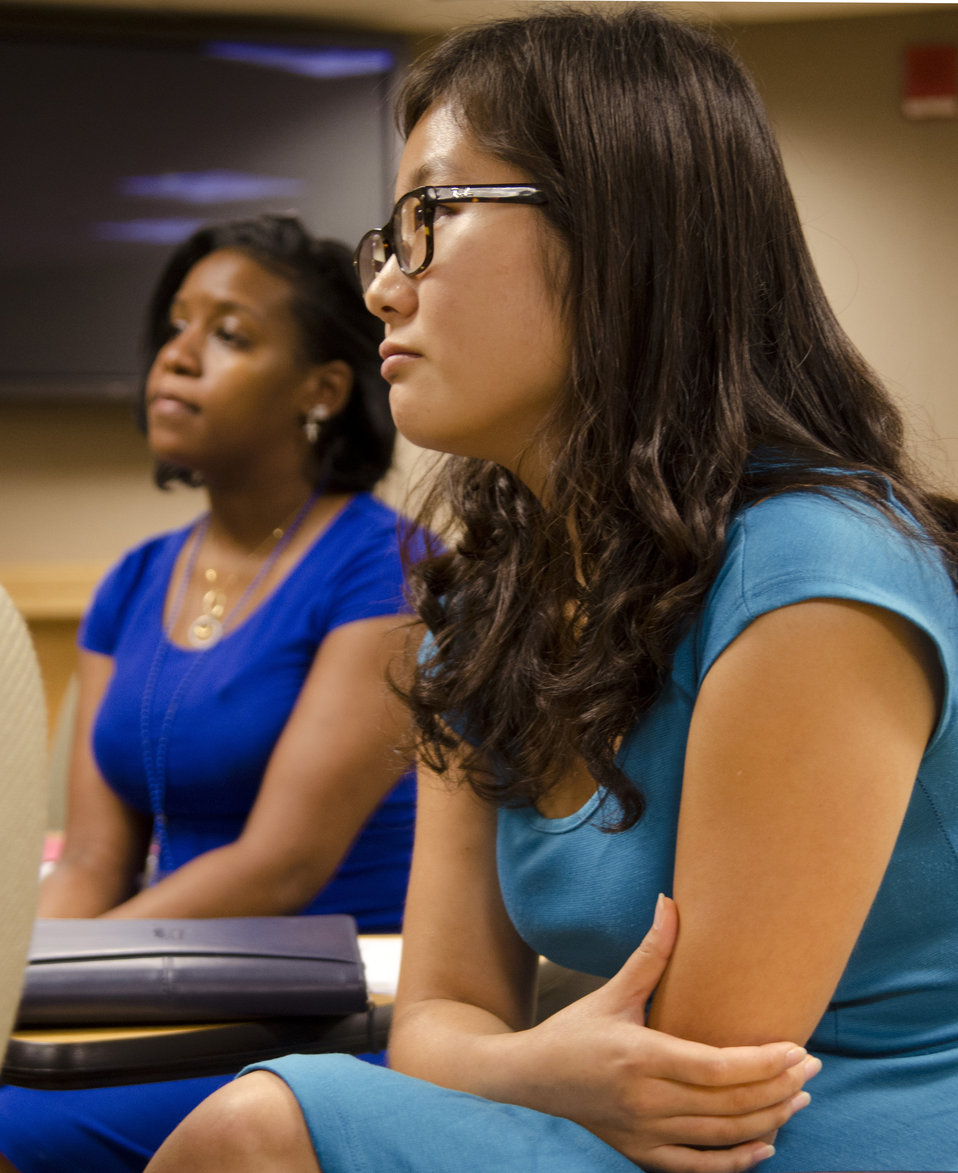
U.S. Department of Agriculture (USDA) Foreign Agricultural Service (FAS) intern Raymona Carnegie (right) listens to presentations at the USDA Internship Program Listening Session held in USDA’s South Building in Washington, D.C. on Monday, August 7, 2012. The purpose of the USDA Internship Program Listening Session is to provide interns with a forum to express their views about their experiences as a USDA intern. These young people will be among the most promising future USDA leaders and participate in an individual discussion and group session that will develop leadership skills.